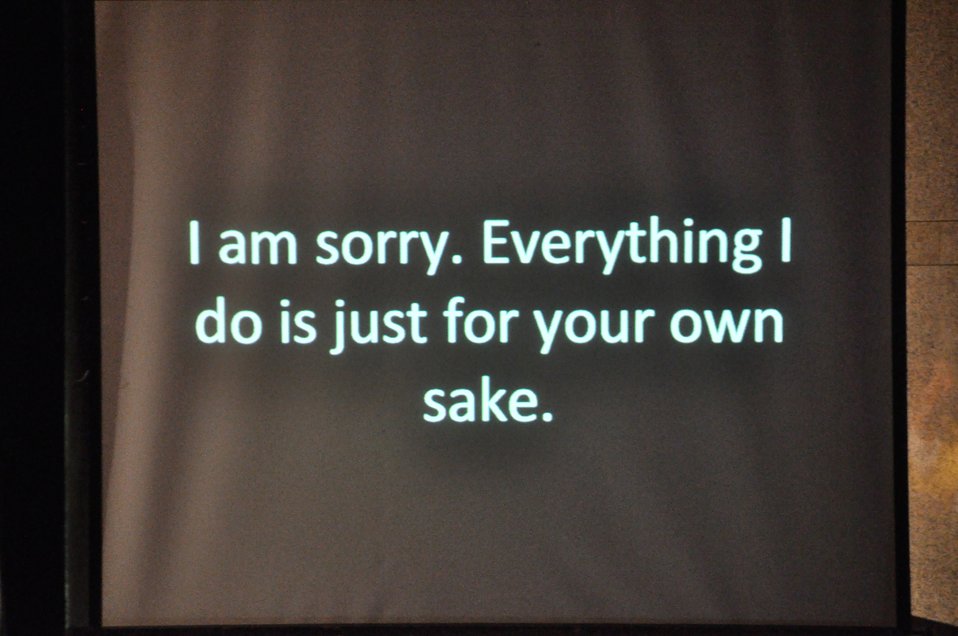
PEPFAR Musical Questions and Exclamations

Hanoi, May 17, 2013